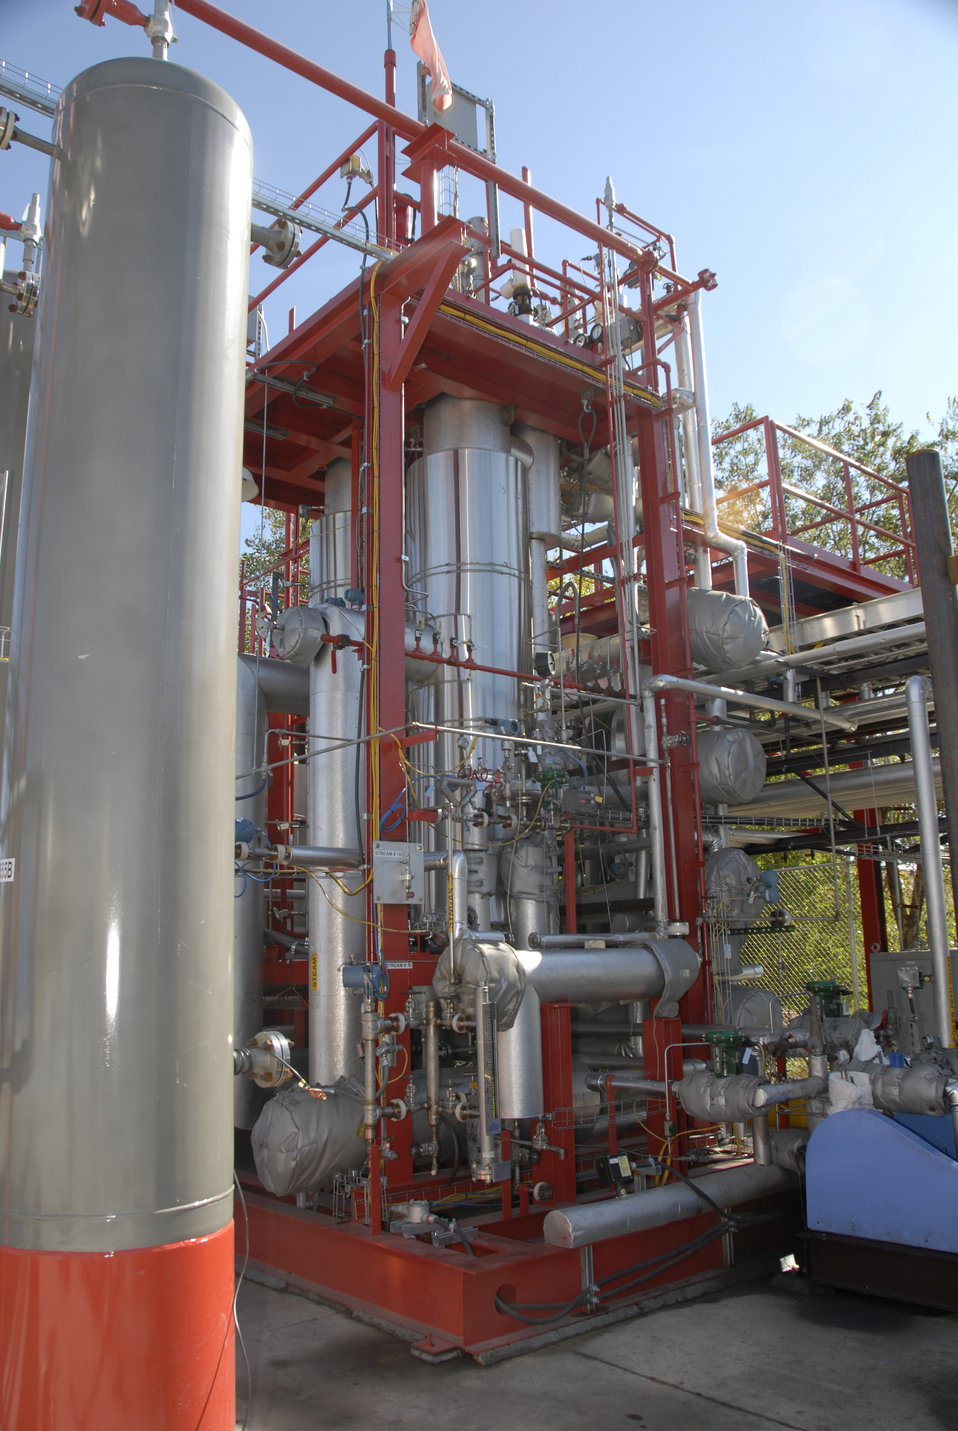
Wood chips are used as a source for cellulosic ethanol production at Range Fuels in Broomfield, Colorado on October 23, 2008. Cellulosic ethanol is a biofuel produced from wood, grasses, or the non-edible parts of plants. Wood chips and other cellulosic materials have several advantages in that they are abundant, they don't compete with food crops such as corn or soybean, and they result in far lower carbon-dioxide emissions.